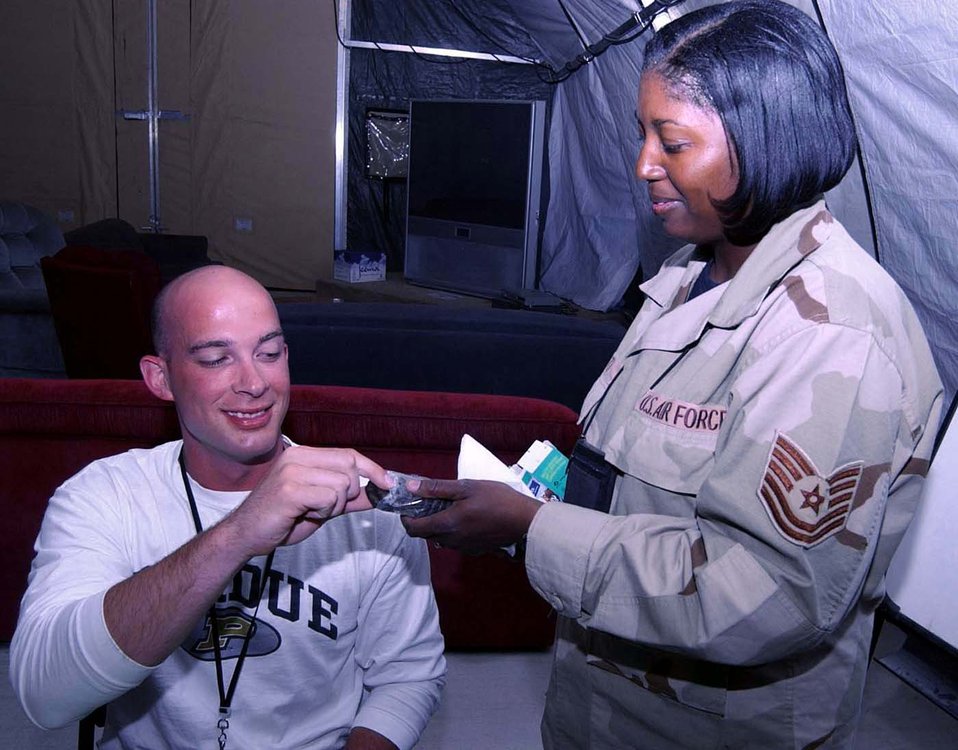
A taste of America

BAGRAM AIR BASE, Afghanistan -- Adem Buell gets a Girl Scout cookie from Tech. Sgt. Thearsea Smith. Brownie Troop 2859 from Marlboro, Mass., sent about 150 boxes of cookies to the 455th Expeditionary Operations Group here recently. Mr. Buell is a contractor, and Sergeant Smith is assigned to the 455th EOG's service flight.